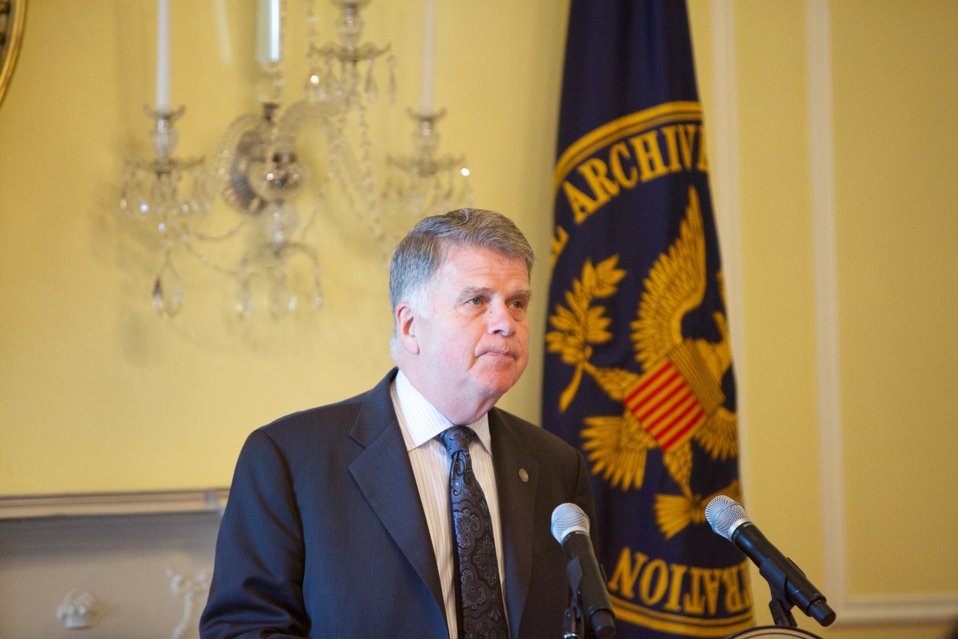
Hitler Album Donation Event